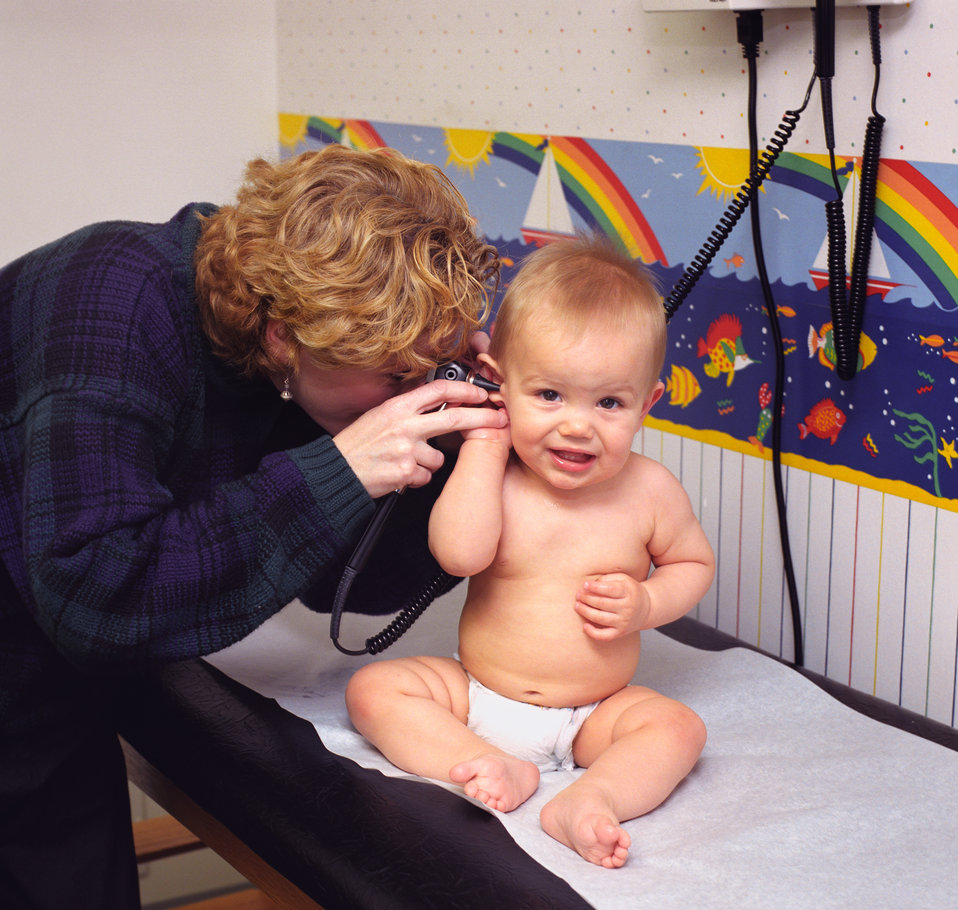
This photograph depicts a physician examining an infant at nine months of age.